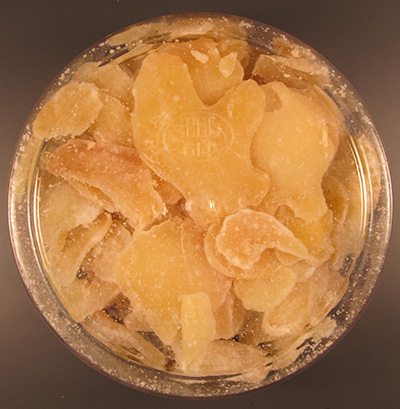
RECALLED – Ginger Candy

August 2, 2012 – Product Recall – Evershing International Trading Inc. Announces Recall of Ginger Candy.